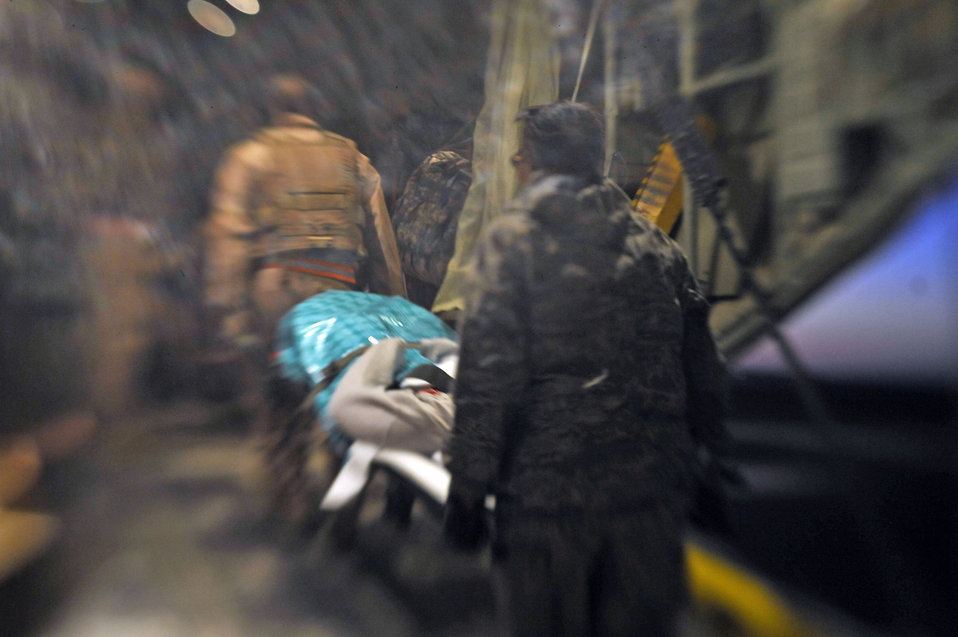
Kandahar Airmen fly missions of mercy

Airmen transport an Afghan patient into an HC-130 Hercules at Camp Bastion, Afghanistan Oct. 6, 2009. These Airmen are assigned to the 451st Aeromedical Squadron at Kandahar Airfield, Afghanistan.